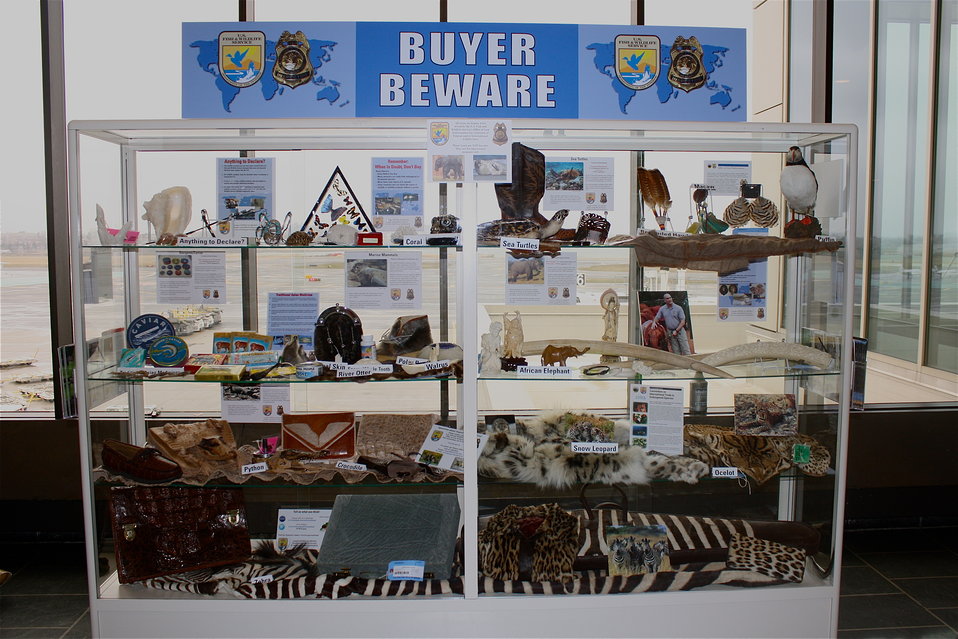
Buyer Beware Exhibit at Logan Airport

Our Buyer Beware Exhibit is located in the international departure terminal (Terminal E) at Logan Airport in Boston, Mass.